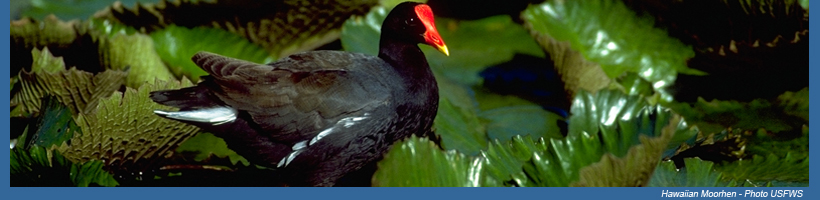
Hawaiian moorhen - Pacific Islands Fish and Wildlife Office